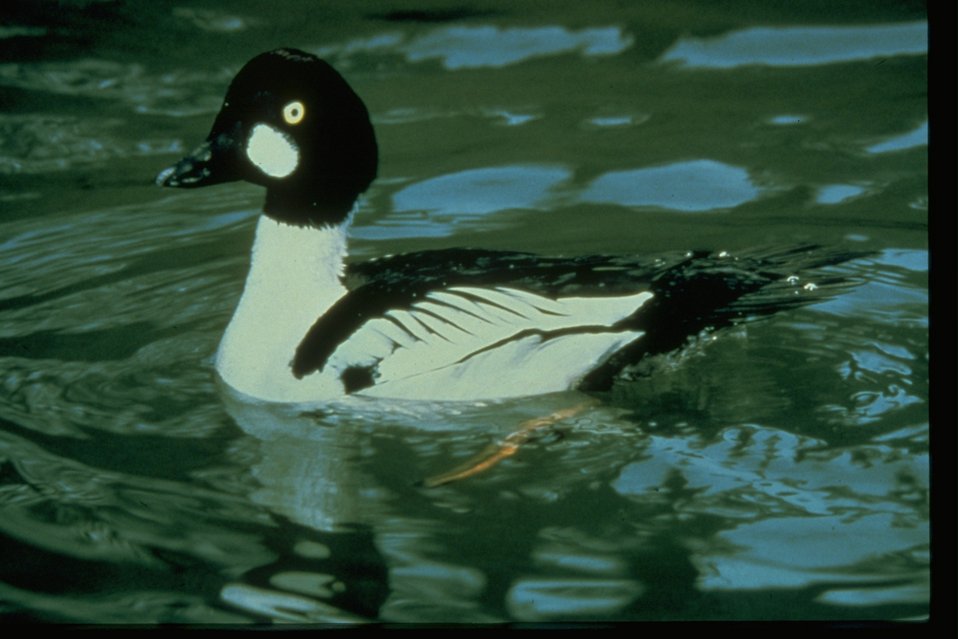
The Common Goldeneye Duck.